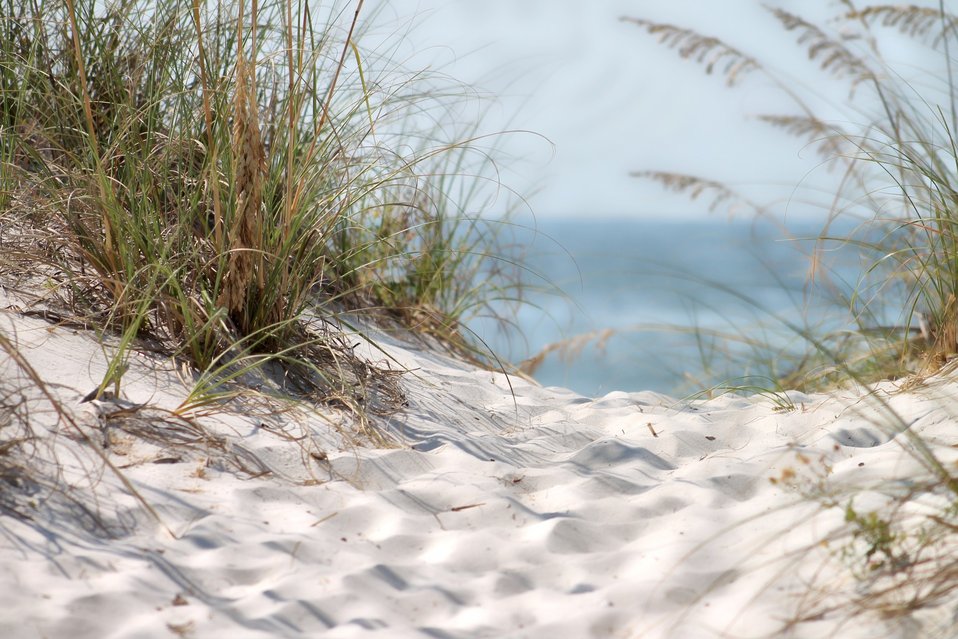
Beach at gulf shores, alabama.